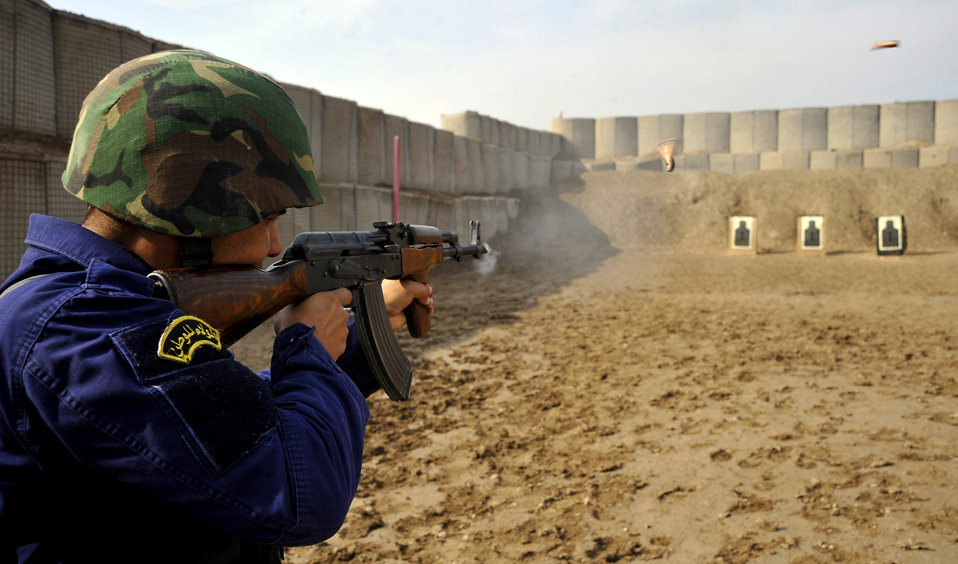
Airmen lead training course for Iraqi police

An Iraqi police officer shoots downrange at his target after recieving instructions from Staff Sgt. Michael Gomez Nov. 21, 2009, in Baghdad, Iraq. Sergeant Gomez is assigned to the 732nd Expeditionary Security Forces Squadron Det. 2.